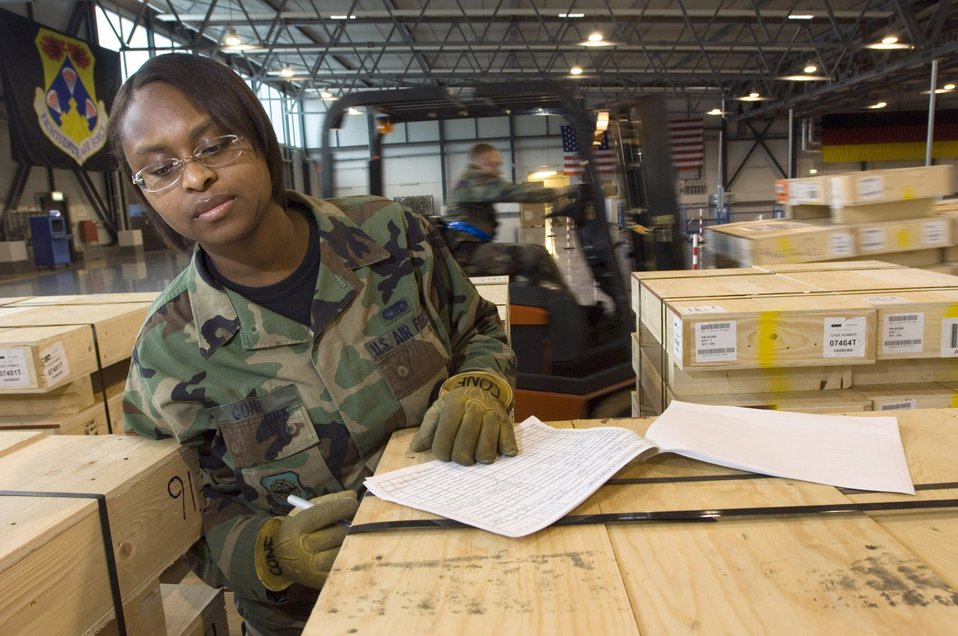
Ramstein airlift mission at full speed

Airman 1st Class Gloria Cone checks pallets full of bulletproof glass bound for Humvees in Iraq as they are unloaded at Ramstein Air Base, Germany, on Thursday, March 30, 2006. Airman Cone is a cargo processing specialist with the 723rd Air Mobility Squadron.